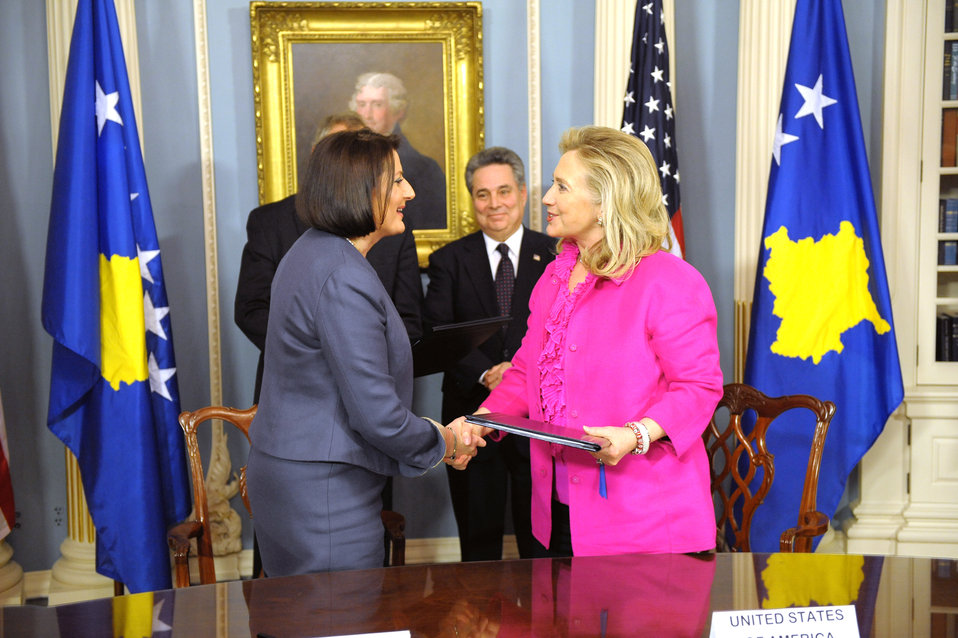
Secretary Clinton Shakes Hands With President of Kosovo Jahjaga

U.S. Secretary of State Hillary Rodham Clinton and President of Kosovo Atifete Jahjaga shake hands after signing the U.S.-Kosovo Agreement on the Protection and Preservation of Certain Cultural Properties, at the U.S. Department of State in Washington, D.C., on December 14, 2011.